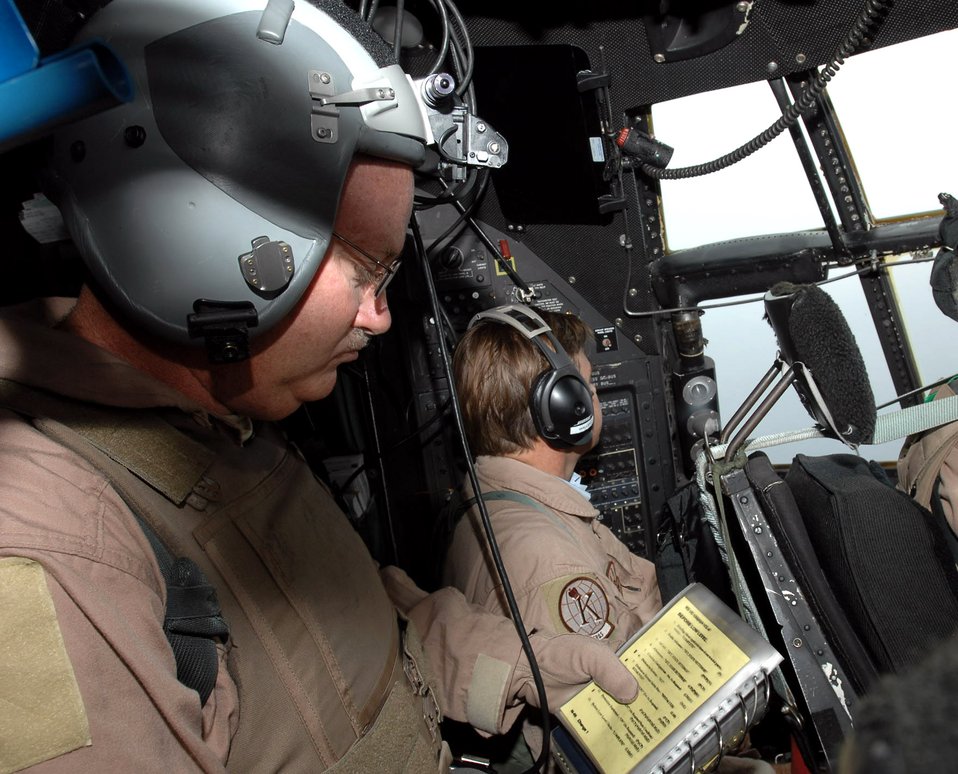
April 19 airpower: Horn of Africa mission continues

Senior Master Sgt. Steve Lacy runs a checklist while flying in a HC-130 aircraft as part of a Combined Joint Task Force - Horn of Africa mission April 14. Sergeant Lacy is deployed to Africa from the 39th Combat Rescue Squadron at Patrick Air Force Base, Fla. Combined Joint Task Force - Horn of Africa is a unit of the U.S. Central Command. The organization's mission is to prevent conflict, promote regional stability and protect coalition interests in order to prevail against extremism.